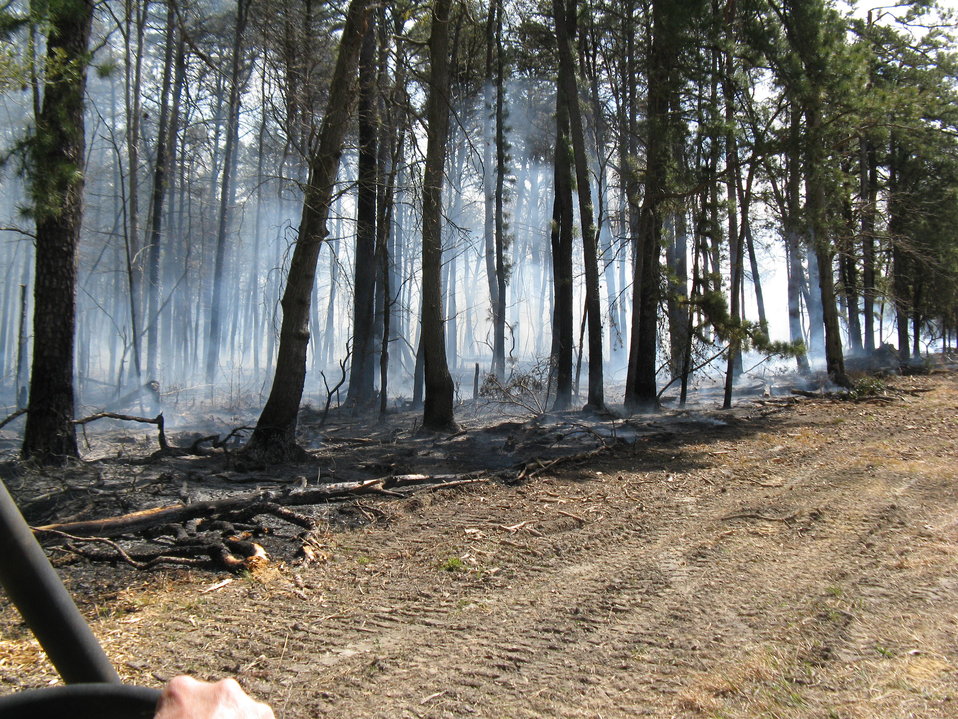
Understory Cleared

Laurel, Maryland, April 5, 2012: A review of a controlled burn in an oak/pine forest shows a successful burn of small trees and brush in the understory. The burn was done at Patuxent Research Refuge's Savannah Restoration Unit to increase refuge species and habitat diversity. Specifically, the refuge hoped to increase density and diversity of rare darkling beetles and forest floor plants.